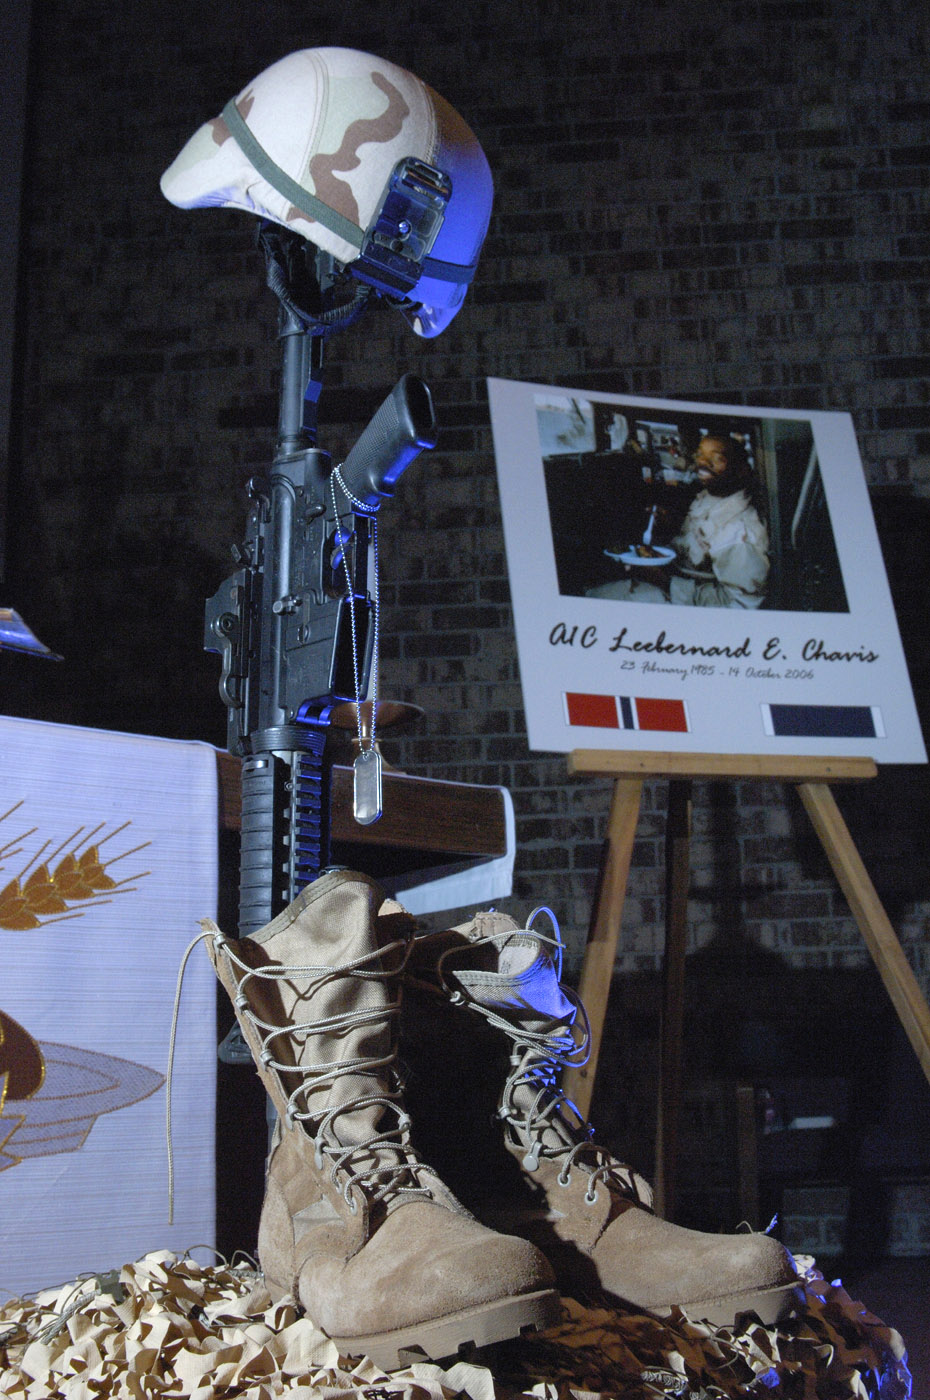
Fallen Airman honored during memorial service

A 'fallen soldier'' memorial was set up in the chapel at Moody Air Force Base, Ga. in memory of Airman 1st Class LeeBernard Chavis. Airman Chavis, from the 824th Security Forces Squadron, was posthumously awarded the Bronze Star and Purple Heart after he was killed while on patrol in Baghdad, Iraq.